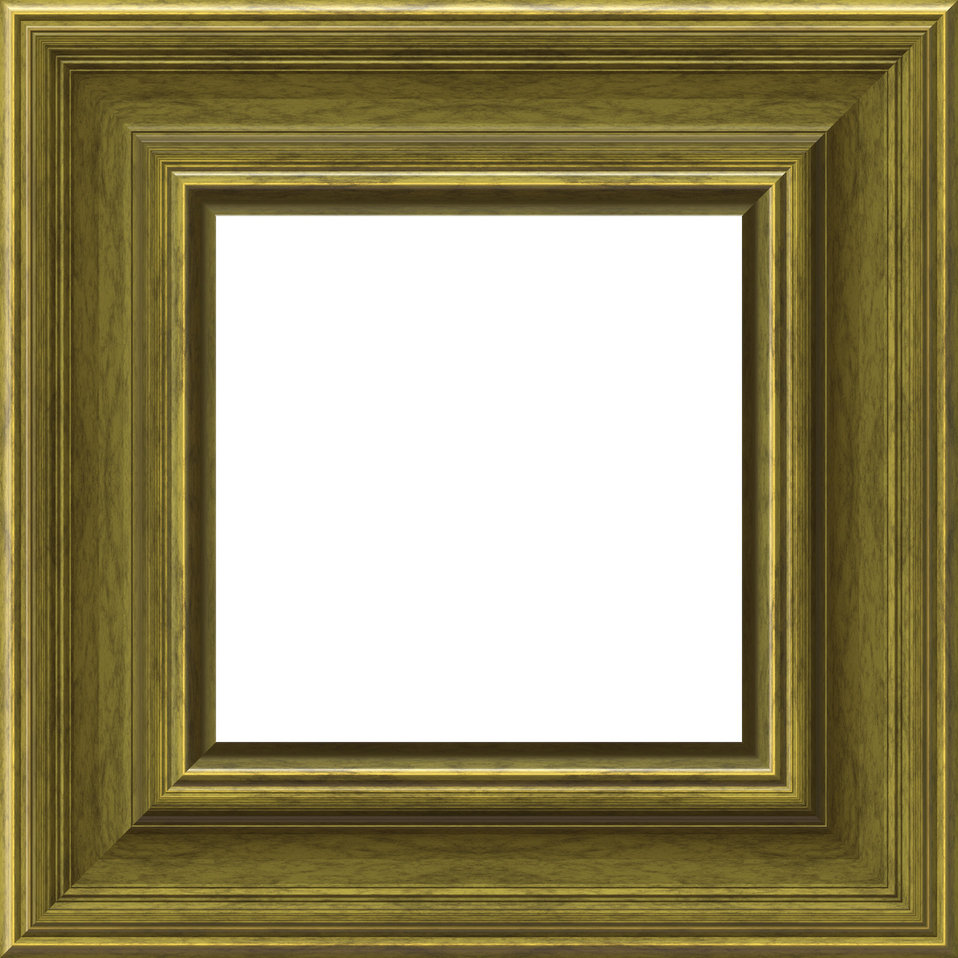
Gold wood frame

A nice golden wood textured frame...2000x2000 pixels.